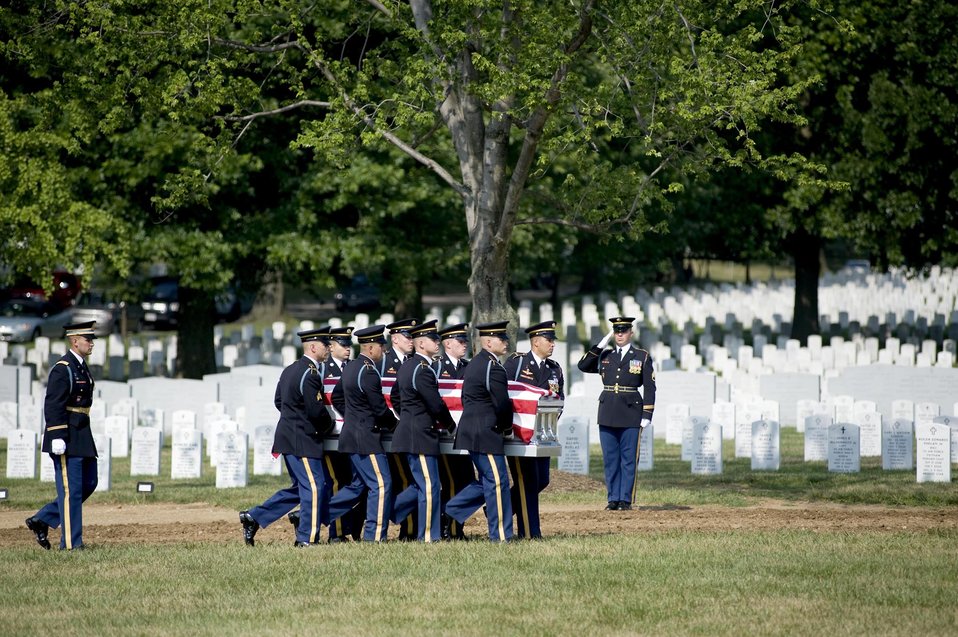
Seven WWII Airmen buried at Arlington National Cemetery

Soldiers from the 3rd U.S. Infantry Regiment, The Old Guard, carry a casket containing the remains of six Airmen, who died during World War II in Burma July 15, 2010 at Arlington National Cemetery, Va.